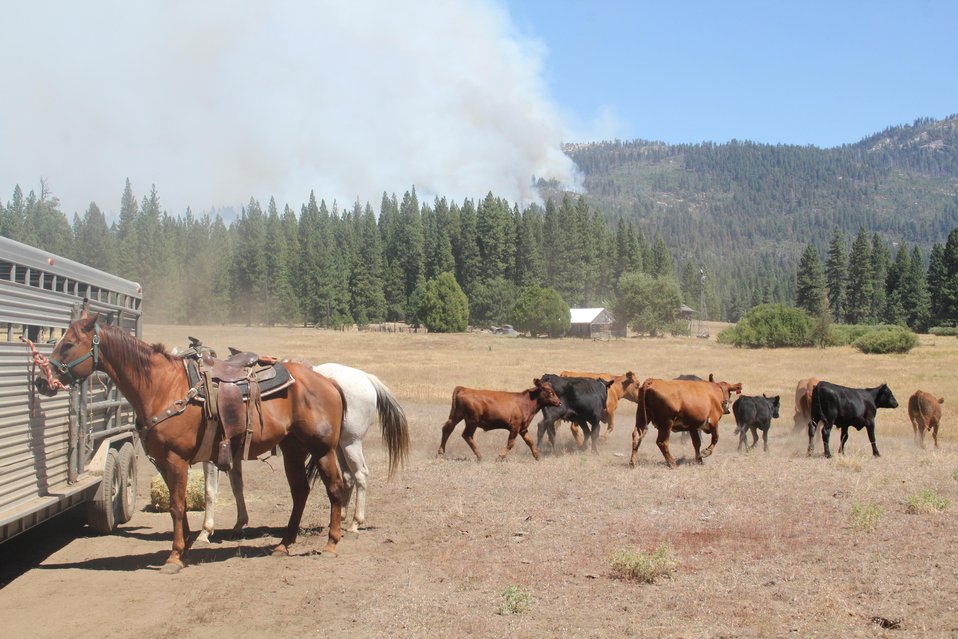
Ranchers and farmers tend to livestock in Ackerson Meadow at the Rim Fire. The Rim Fire in the Stanislaus National Forest near in California began on Aug. 17, 2013 and is under investigation. The fire has consumed approximately 192,737 acres and is 30% contained.